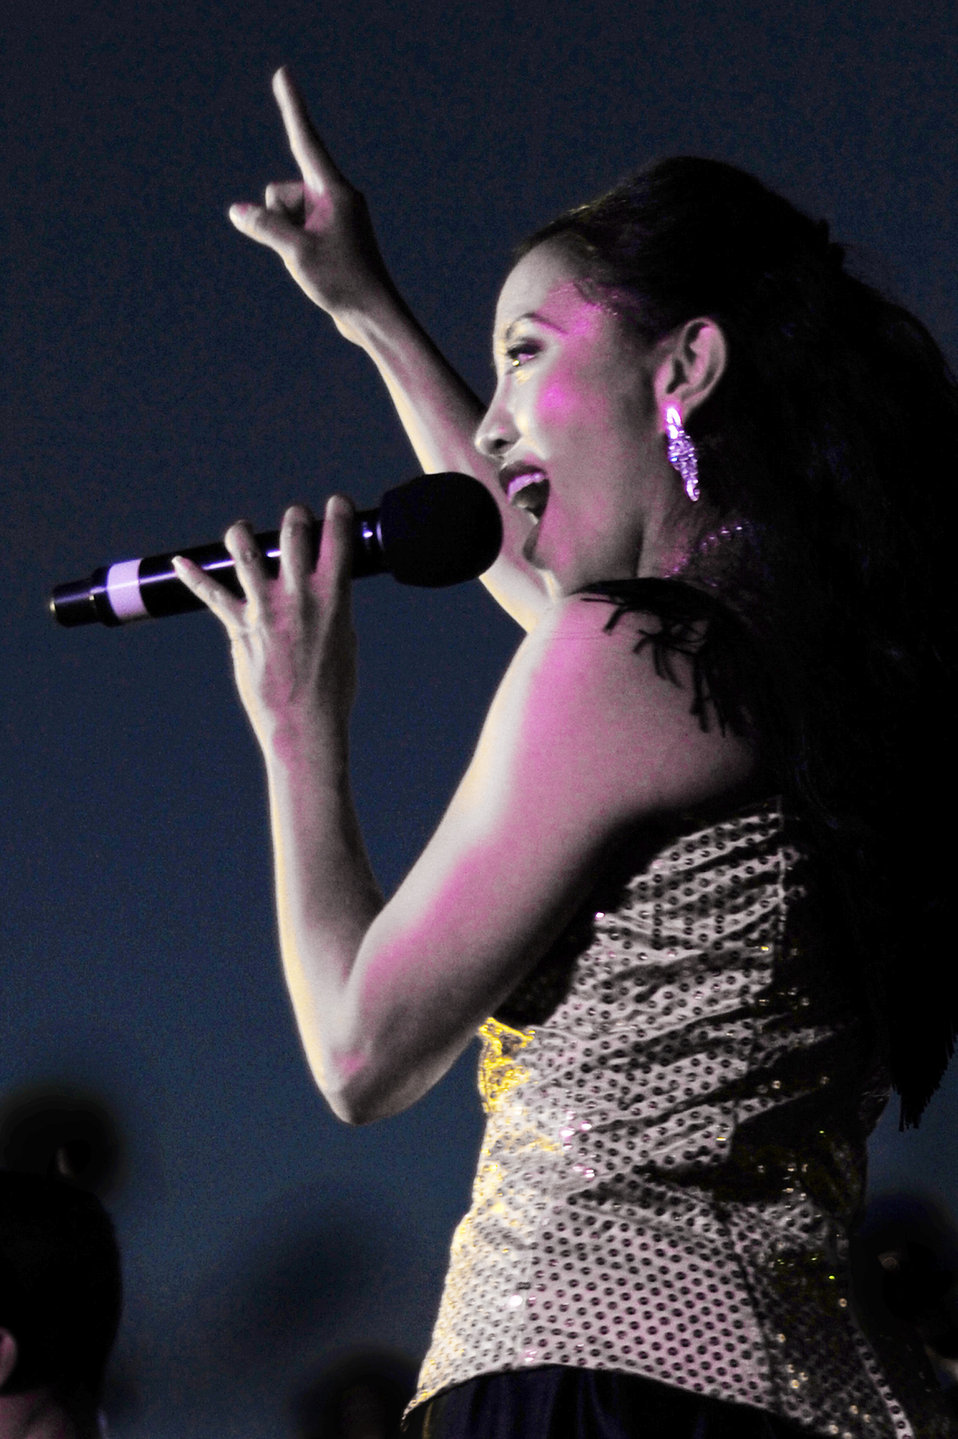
Tops In Blue entertain deployed forces in Kyrgyzstan

Senior Airman Jennifer Bone sings during a Tops In Blue show July 9 at Manas Air Base, Kyrgyzstan. Airman Bone is a 17th Communications Squadron ground radio maintenance journeyman stationed at Goodfellow Air Force Base, Texas, and hails from San Diego.